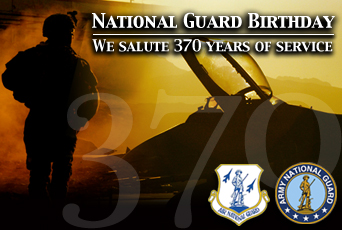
Web site commemorates National Guard birthday

Celebrating the he National Guard's 370 years birthday Dec. 13, the National Guard Bureau is dedicating a Web site to the organization and its history.